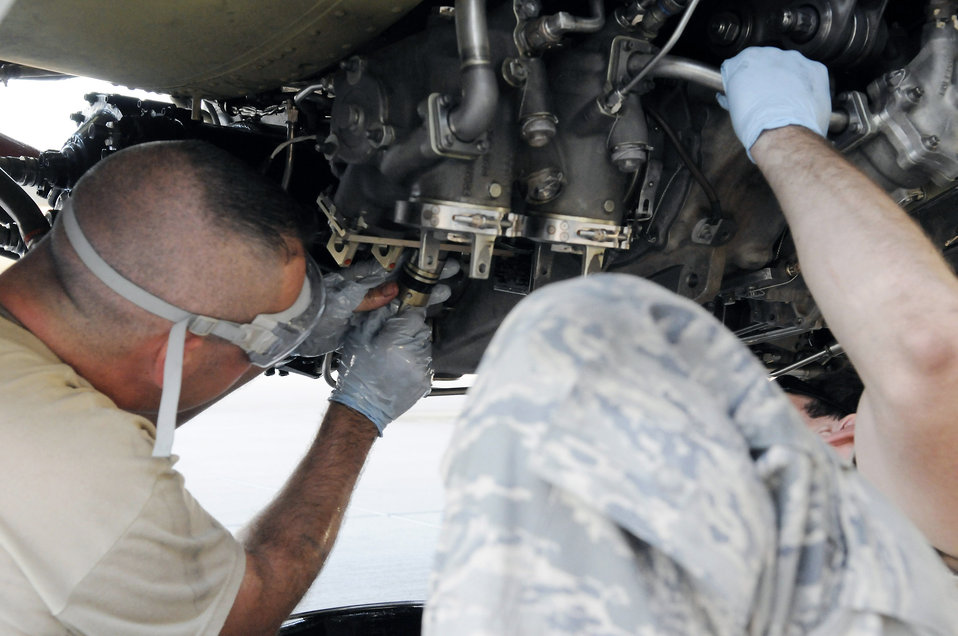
Engine tune up

Staff Sgt. Eric Mutschlechner replaces an engine magnetic chip during a 60-hour inspection on a KC-135 Stratotanker engine Nov. 20 at an air base in Southwest Asia. KC-135s provide the core aerial refueling capability for the Air Force and support to Navy, Marine Corps and allied nation aircraft in the U.S. Central Command area of responsibility. Sergeant Mutschlechner is a native of San Marcos, Texas, and is deployed from MacDill Air Force Base, Fla. He is assigned to the 379th Expeditionary Aircraft Maintenance Squadron.